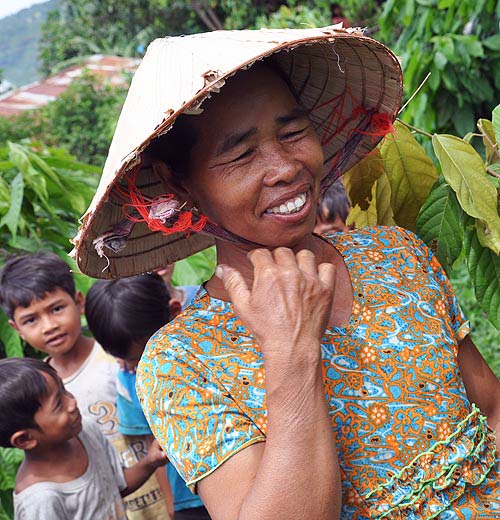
USAID supports livelihoods in central Vietnam through cocoa farming

Y Lam, right, and her grandsons stand among the cocoa trees in their
village of Dar Ju in Vietnam’s central Dak Lak Province. With USAID
support to the Success Alliance cocoa project, farmers like Y Lam
expect a big return on their investment from 200 seedlings planted
in 2007. Hundreds of famers harvested the first pods in 2010. They plant corn, rice, cashews and other cash crops alongside the cacao to maintain their income.